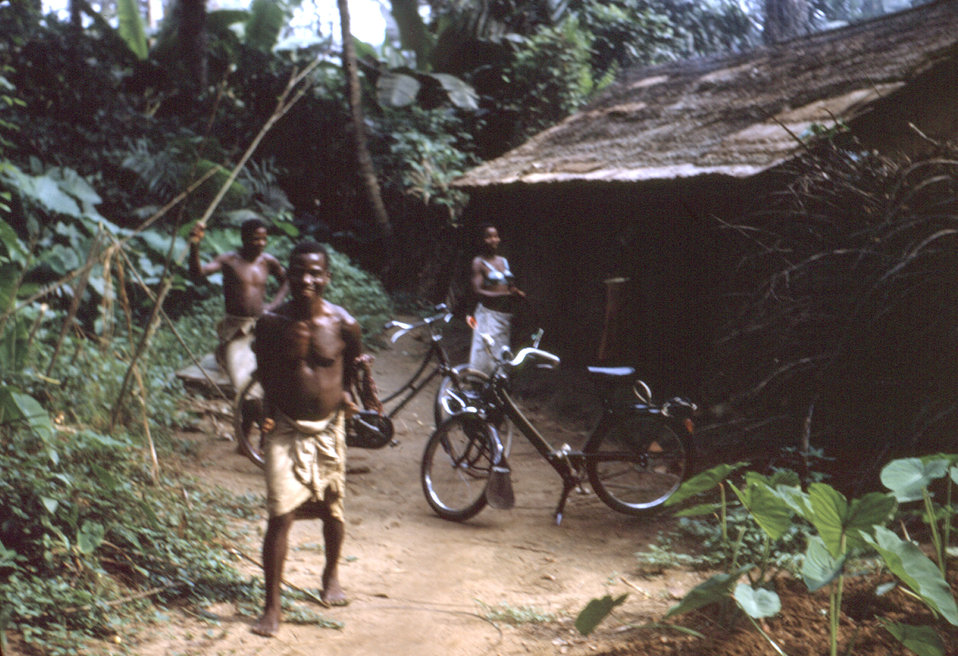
This 1968 photograph showed individuals who were outside of a typical eastern Nigerian house, and was taken during the Nigerian-Biafran civil war in the late 1960s.